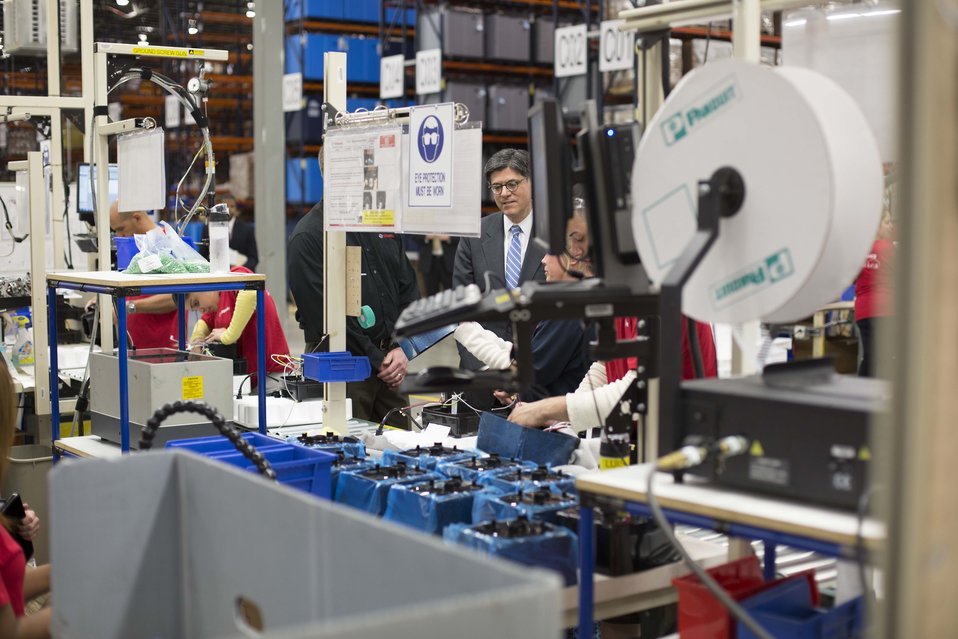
Secretary Lew tours Vitamix manufacturing facility during trip to Cleveland, Ohio

May 7, 2013 — Vitamix Team Leader Jody Birchfield describes the quality expectation of the Vitamix face plate label to Secretary Lew. In the background to the left, assembler Mindy Valcaral installs a motor.